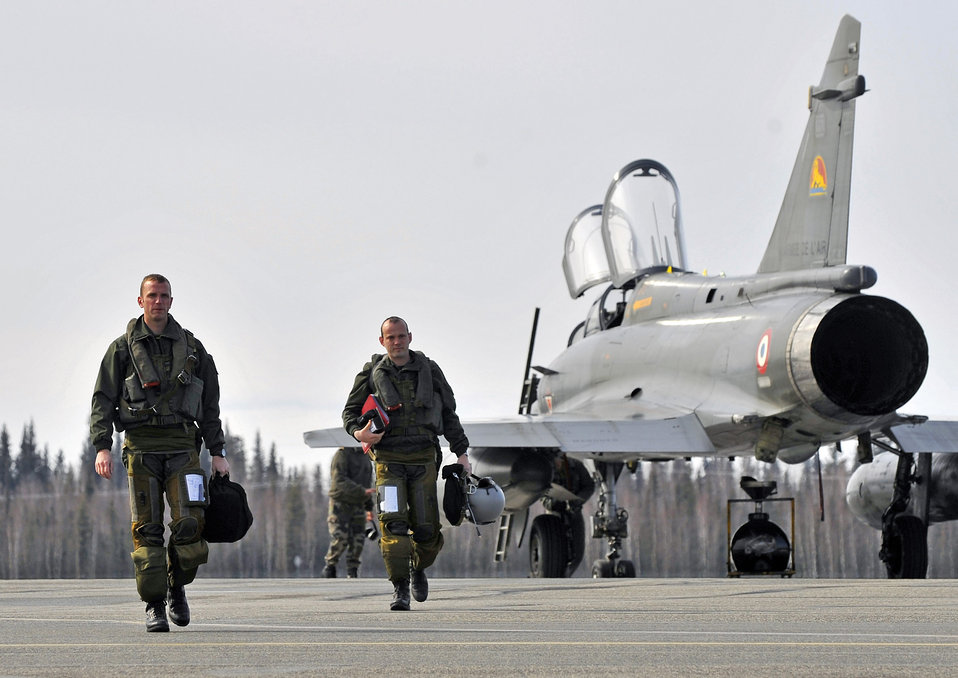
French air forces arrive for Red Flag-Alaska

Two fighter pilots from Luxeuil Air Base, France, walk off the tarmac at Eielson Air Force Base, Alaska, April 14. French air force members arrived at Eielson AFB to participate in Red Flag-Alaska, a military exercise conducted on the Joint Pacific Alaska Range Complex enabling the military to have the largest air-ground training area in the United States.